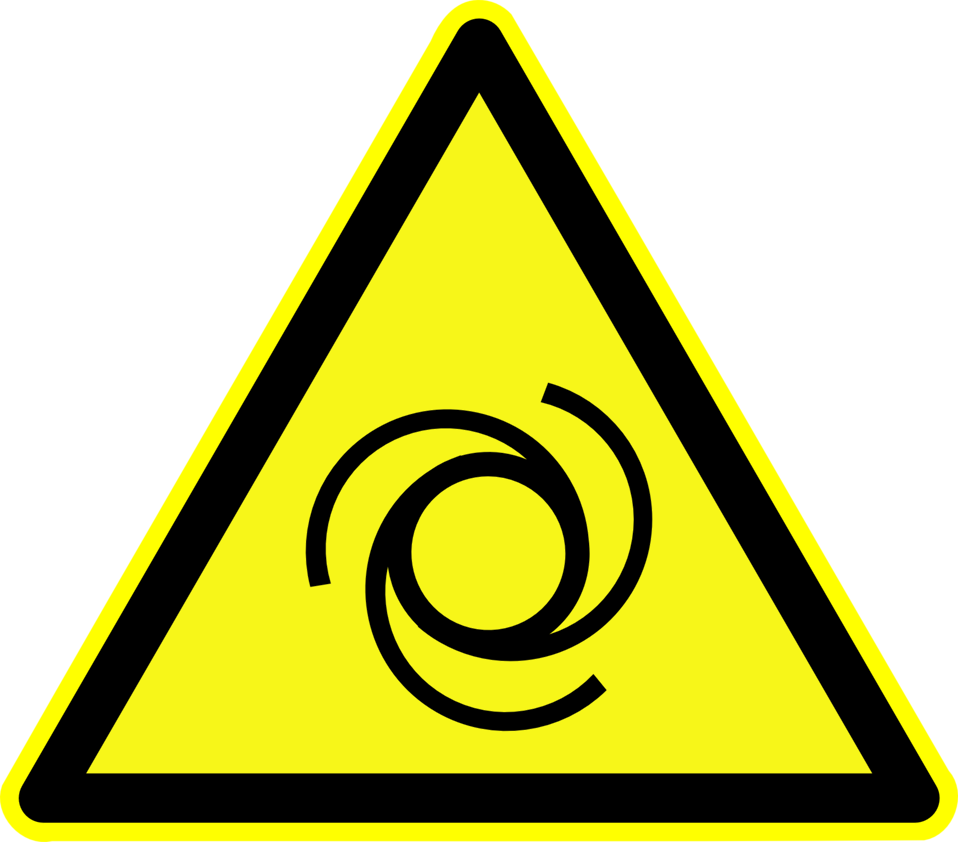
Deutsch: Warnung vor automatischem Anlauf, Warnzeichen D-W025 nach DIN 4844-2 Remotely started equipment, warning sign D-W025 according to German standard DIN 4844-2 Русский: Предупреждающий знак: дистанционное включение